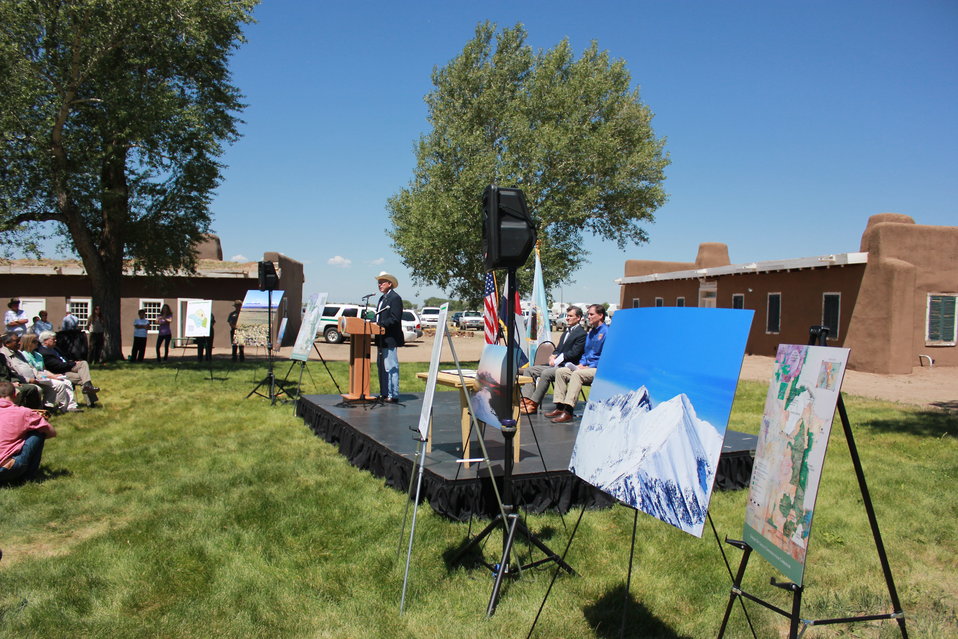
Historic Conservation Easement in Sangre de Cristo Mountains